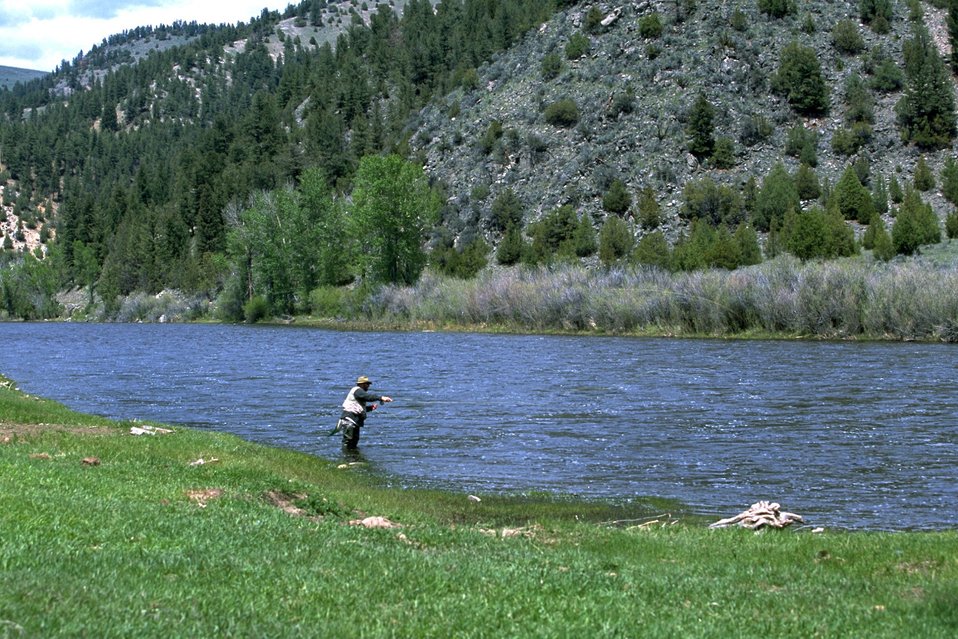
Fisherman at the Big Hole River